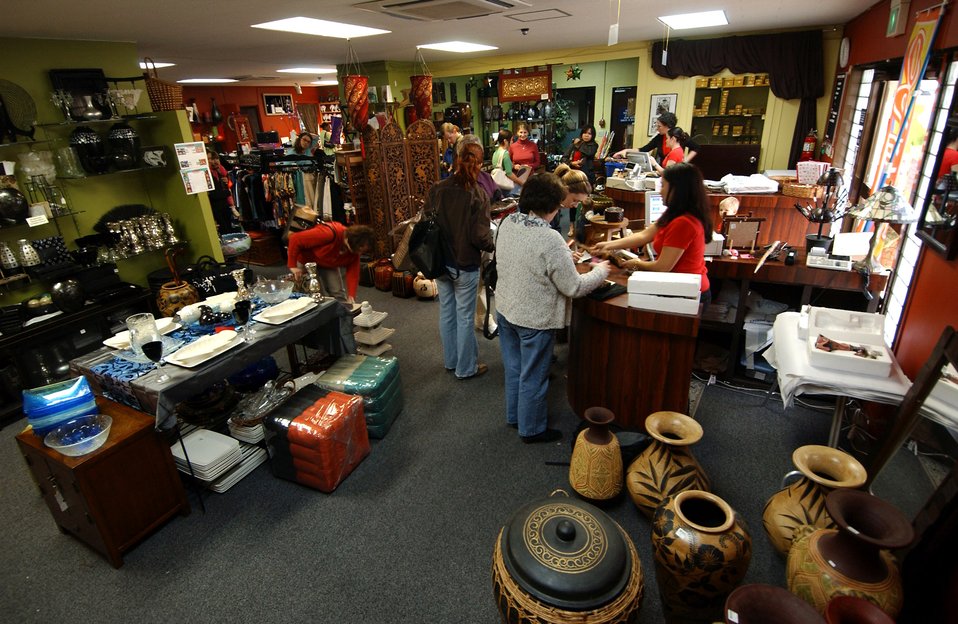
The club that keeps on giving

Military members and their families shop at the Gift Corner located at Kadena Air Base, Japan, Feb. 1. The gift shop sells merchandise from many countries and is operated by the Kadena Officers' Spouse's Club which donates the profits to a variety of local charities and scholarship programs.